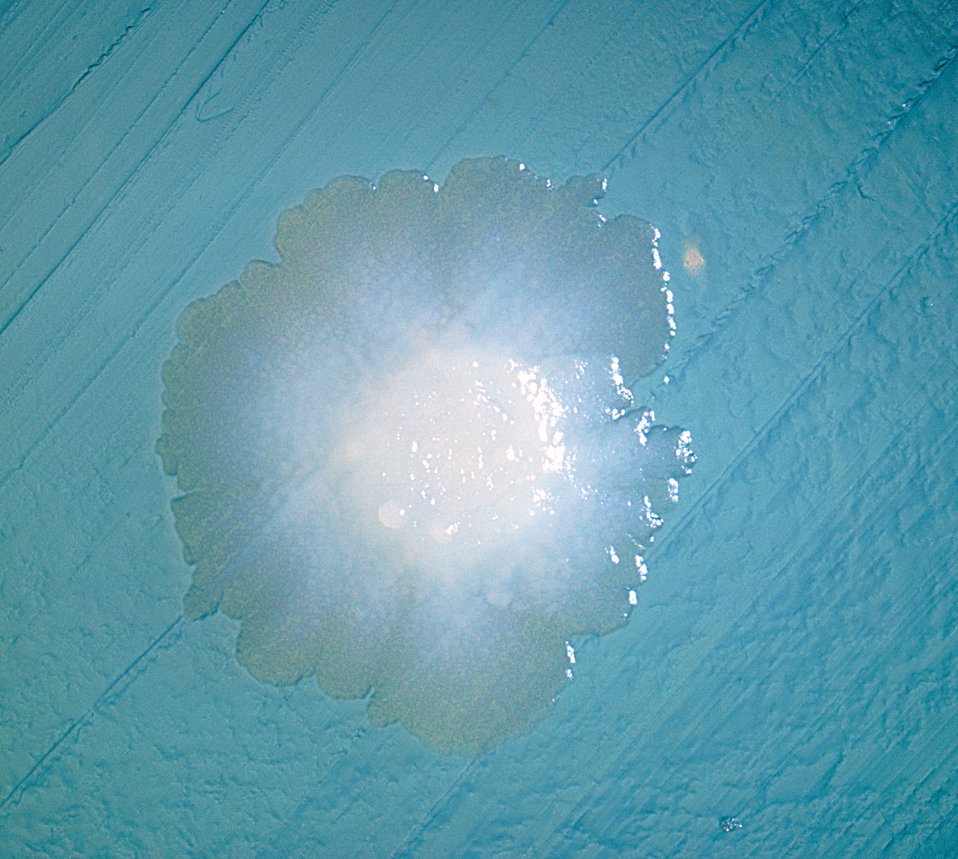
A BHI agar plate culture of Actinomyces sp., strain X-573, at 7 days, incubated anaerobically.